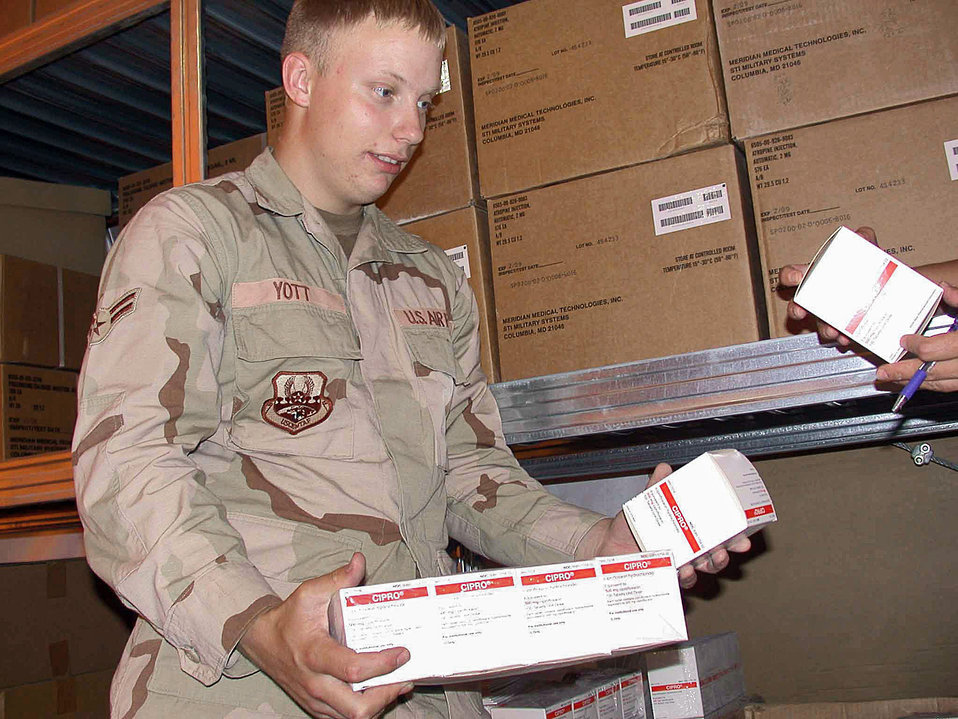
Operation Iraqi Freedom

SOUTHWEST ASIA (AFPN) -- Airman 1st Class Samuel Yott, 379th Expeditionary Medical Squadron medical logistics technician, checks the expiration date and lot numbers on a medical item. The 379th EMEDS medical logistics flight maintains more than $200,000 worth of medical supplies and $2.3 million worth of medical equipment.